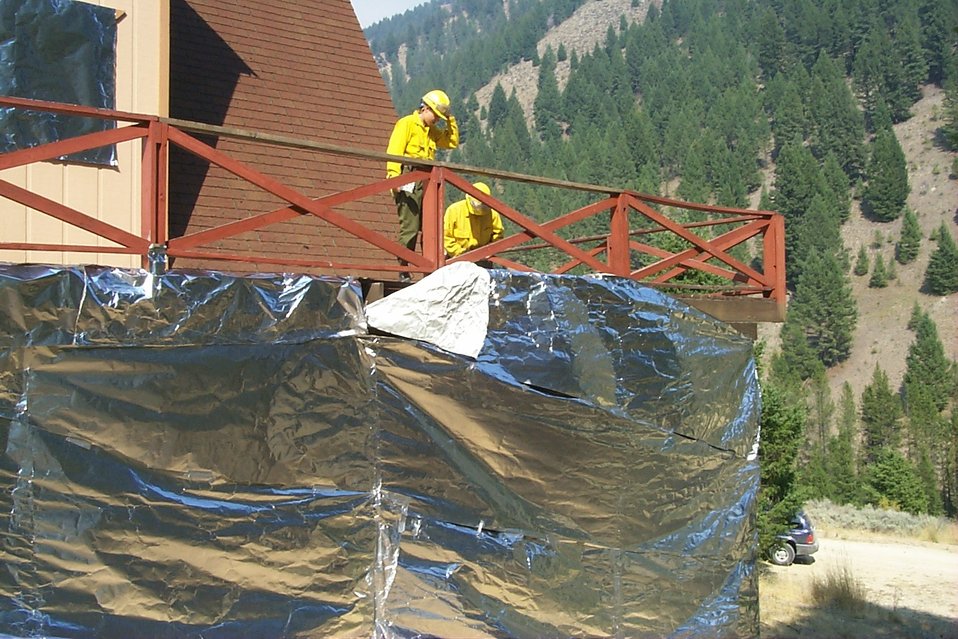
Fire retardant measures Fire Clearwater Fire Salmon Field Office USRD Upper Snake River District